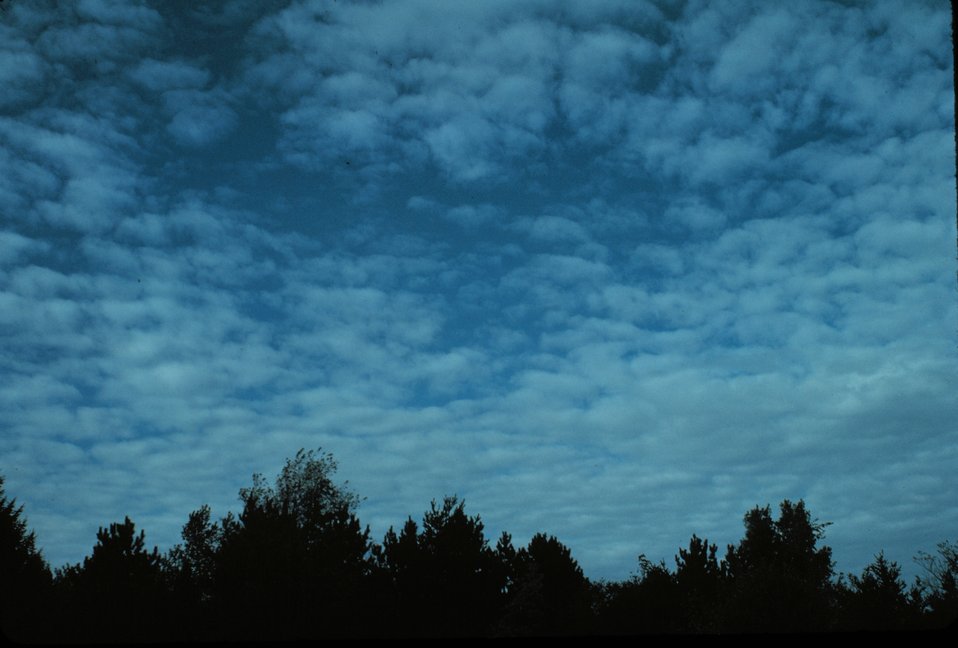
Cirrocumulus